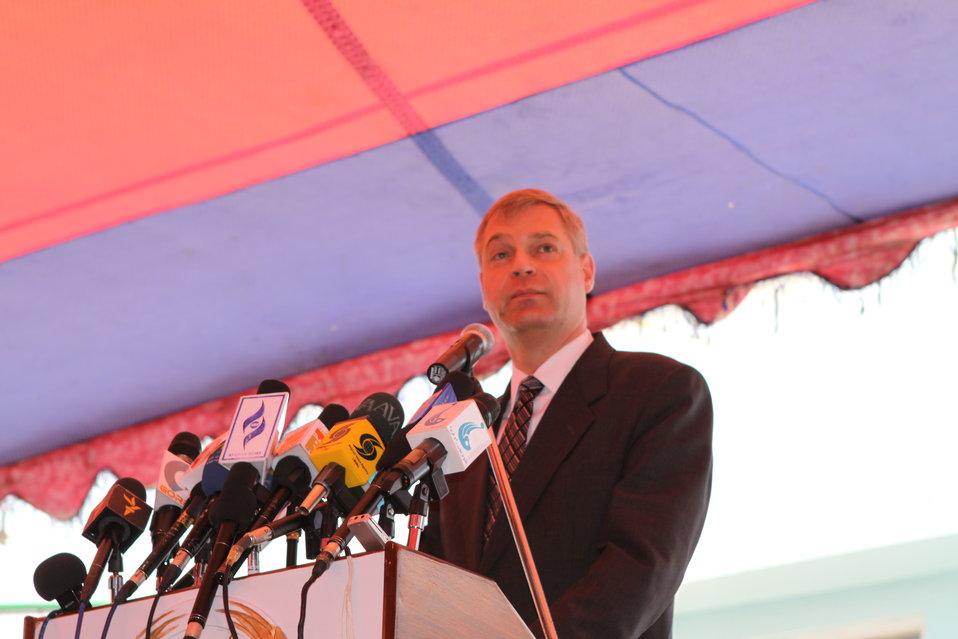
100522 ATVI Graduation 104